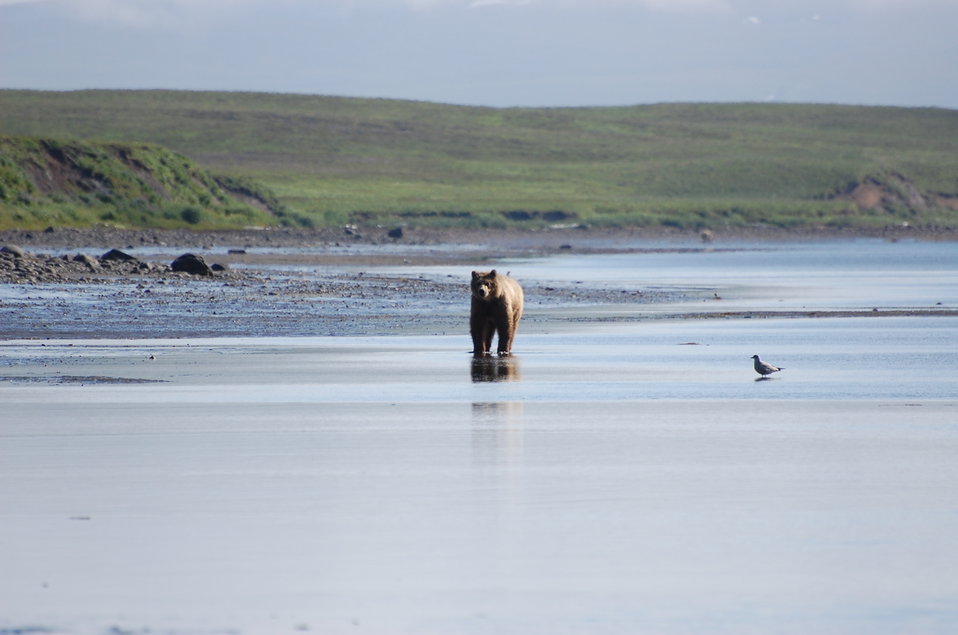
Brown bear in Kinzarof Lagoon

Kinzarof Lagoon, Izembek National Wildlife Refuge